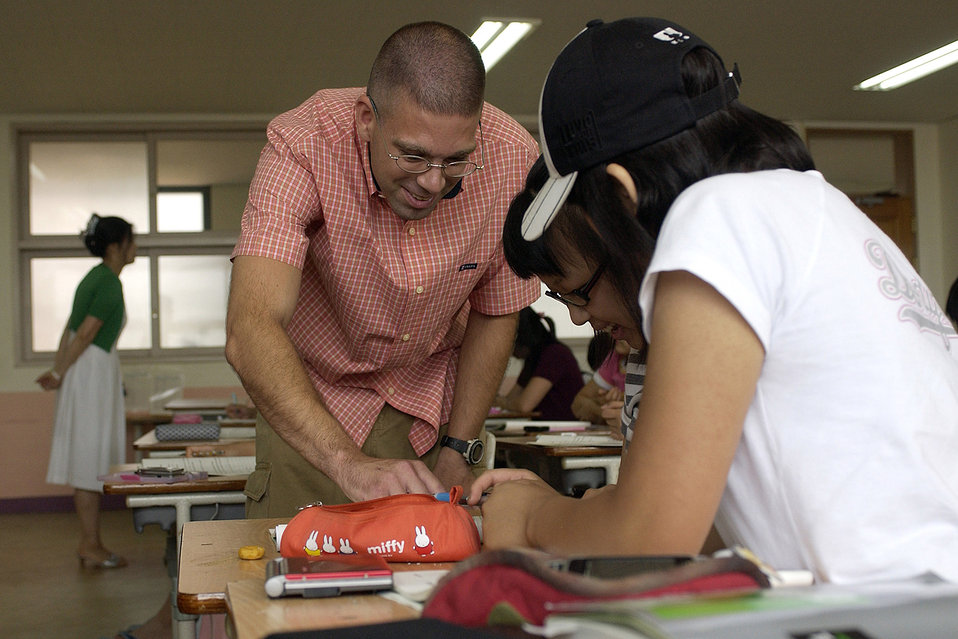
Good neighbors

Senior Airman Garrett Otto tutors Korean children at Sinpung Elementary School during a summer English camp Aug. 1 in Gunsan City, South Korea. The camp is supported by volunteers from the 8th Fighter Wing at Kunsan Air Base as part of the Good Neighbor Program. The school teaches English skills to students over a three-week period. Airman Otto is assigned to the 35th Ammunition Squadron.